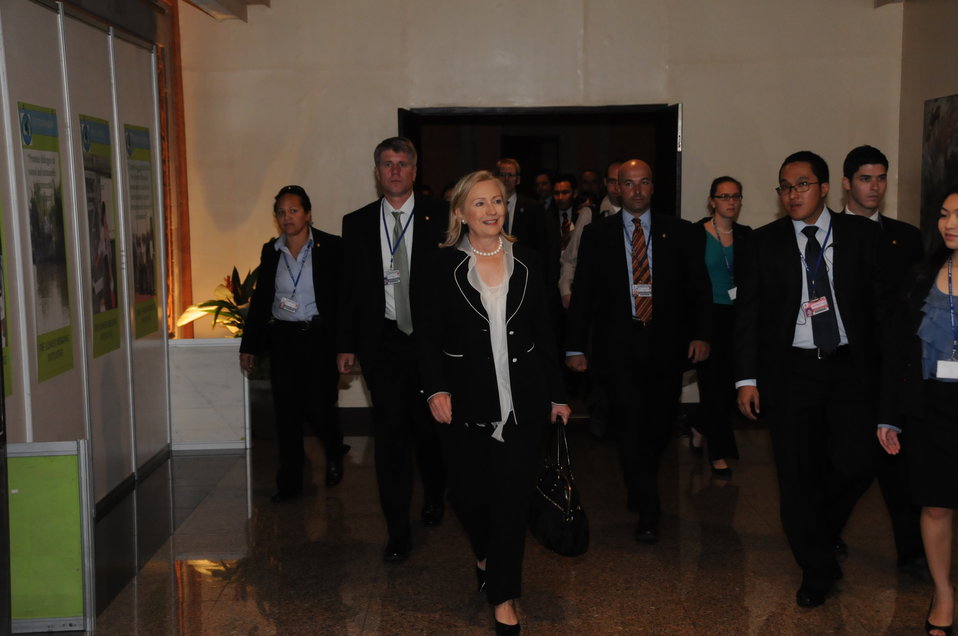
Secretary Clinton Enters Her Bilateral Meeting With Vietnamese Foreign Minister Phạm Gia Khiêm

U.S. Secretary of State Hillary Clinton enters the Medan Room of the Bali International Convention Center for a bilateral meeting with Vietnamese Foreign Minister Pháº¡m Gia Khiêm in Bali, Indonesia, on July 22, 2011.